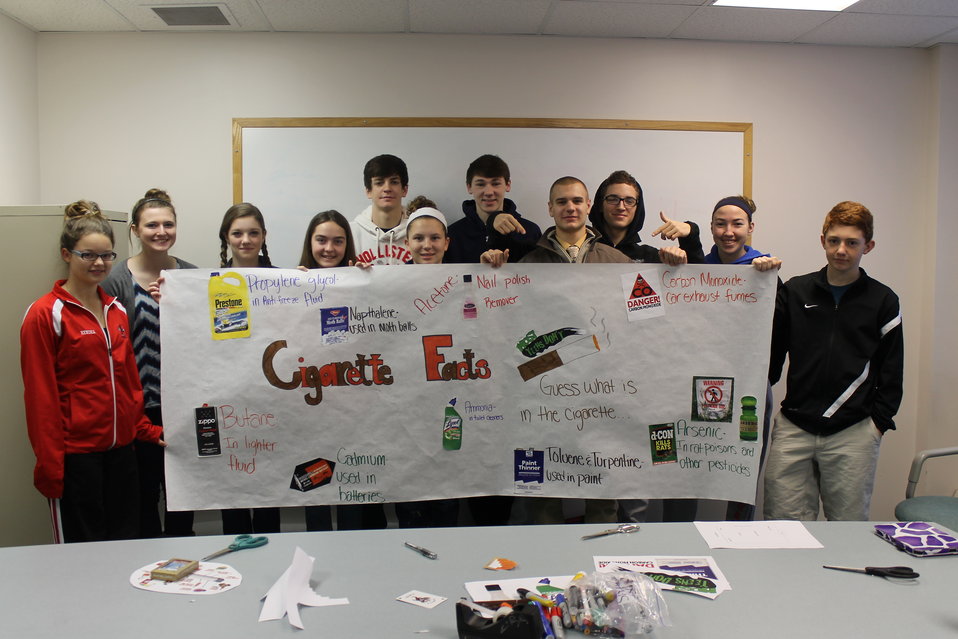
Hanover Horton, NDFW 2013

Jackson, Mich. Jackson County Substance Abuse Prevention Coalition host NDFW 2013 Events.